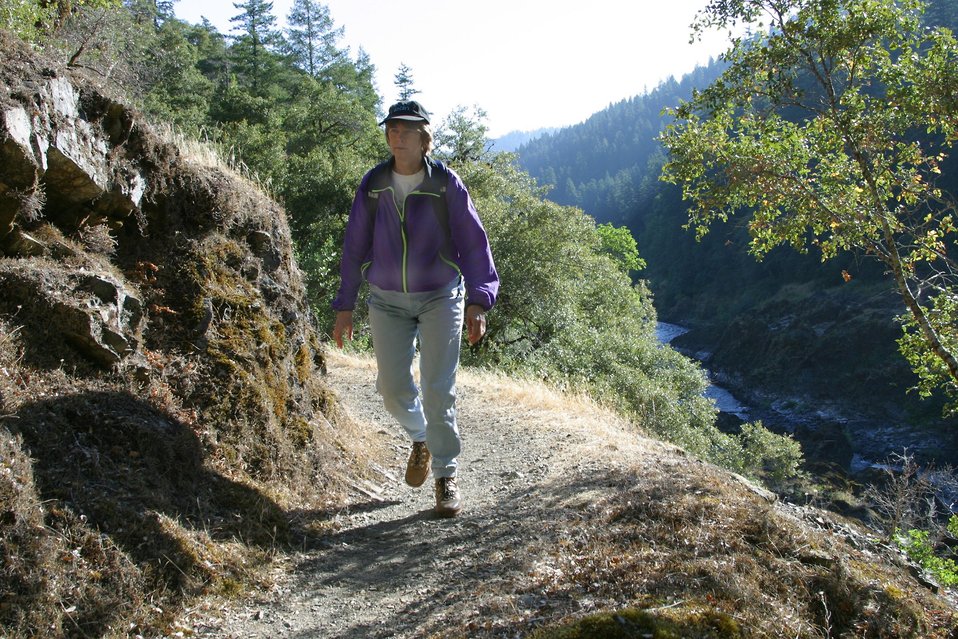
Hiking the Rogue River Trail between Mule Creek and Blossom Rapids.